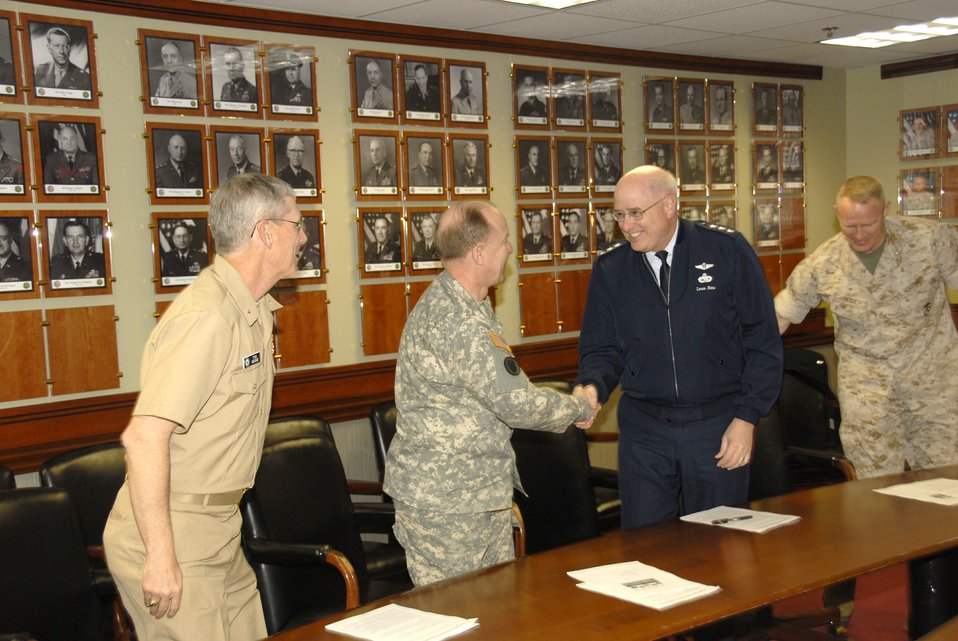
The signing of the JEBWG charter

The service logistics chiefs congratulate one another after signing the Joint Expeditionary Basing Working Group charter at the Pentagon April 13 . Shown sharing the congratulations are Rear Adm. Thomas Moore, Army Lt. Gen. Mitchell Stevenson, Lt. Gen. Loren Reno and Marine Brig. Gen. David Reist. The goal of the JEBWG is